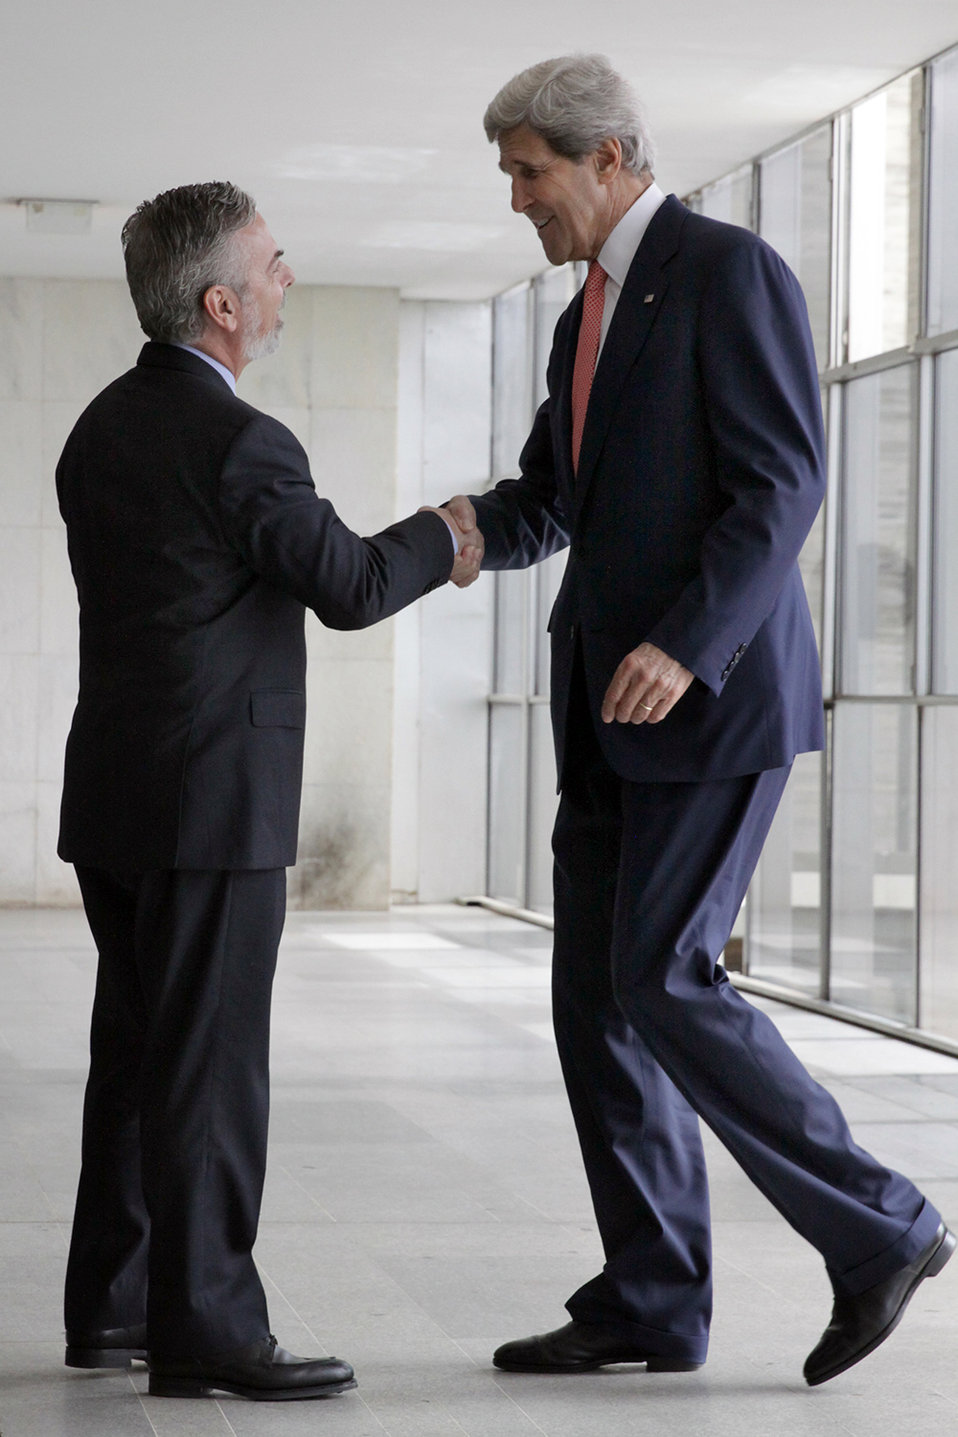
Secretary Kerry Is Greeted By Brazilian Foreign Minister Patriota

U.S. Secretary Kerry of State John Kerry is received by Brazilian Foreign Minister Antonio Patriota at Itamaraty Palace in Brasilia, Brazil, on August 13, 2013. [U.S. Embassy to Brazil photo/ Public Domain]